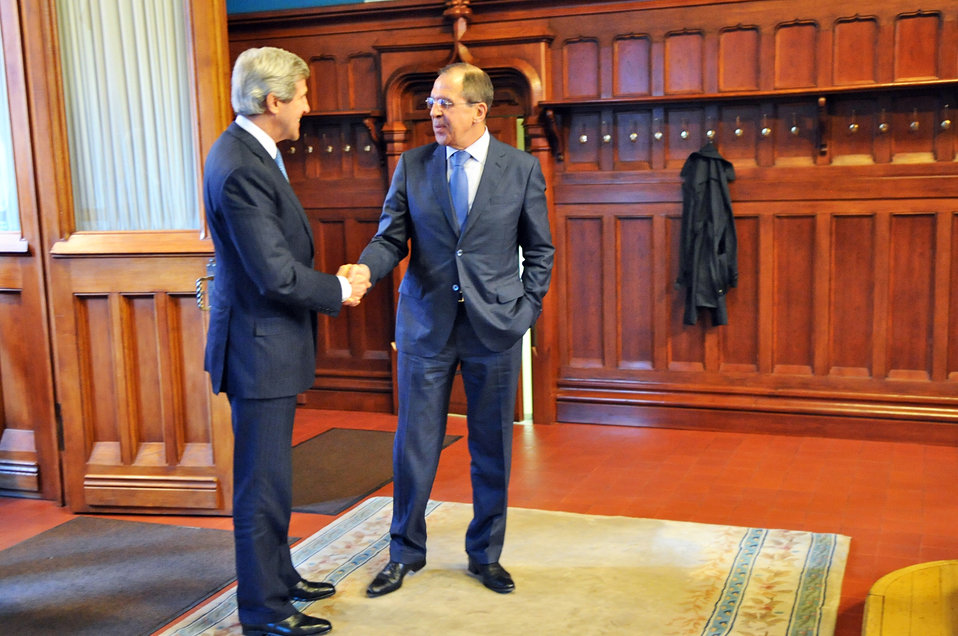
Secretary Kerry Shakes Hands With Russian Foreign Minister Lavrov

U.S. Secretary of State John Kerry shakes hands with Russian Foreign Minister Sergey Lavrov before their meeting at the Russian Ministry of Foreign Affairs' Guesthouse Osobnyak in Moscow, Russia, on May 7, 2013.